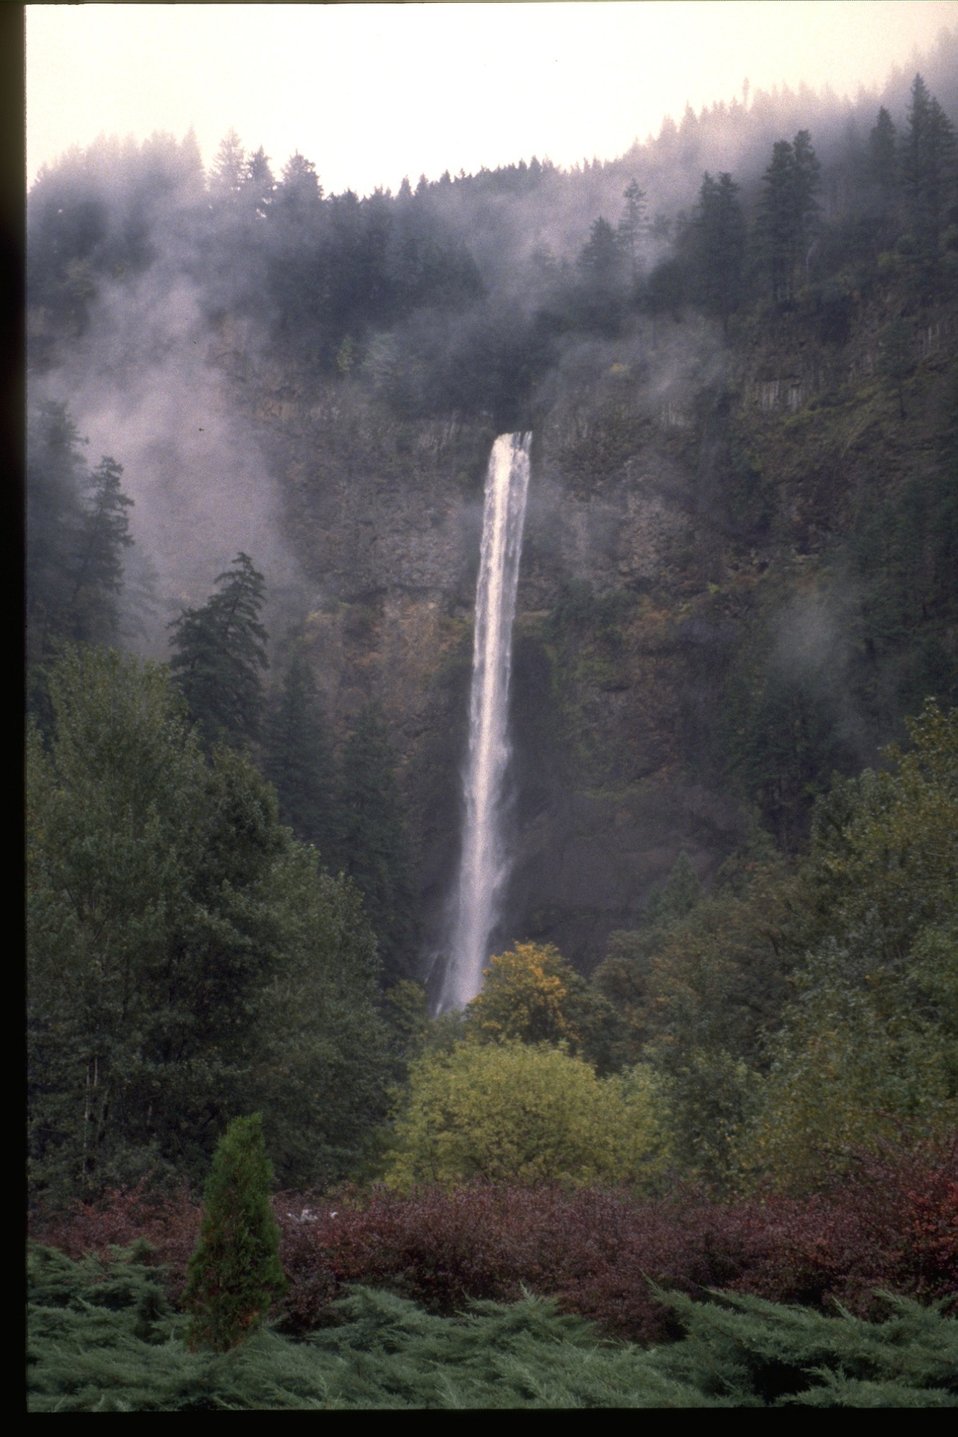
Forest waterfall in western Oregon.